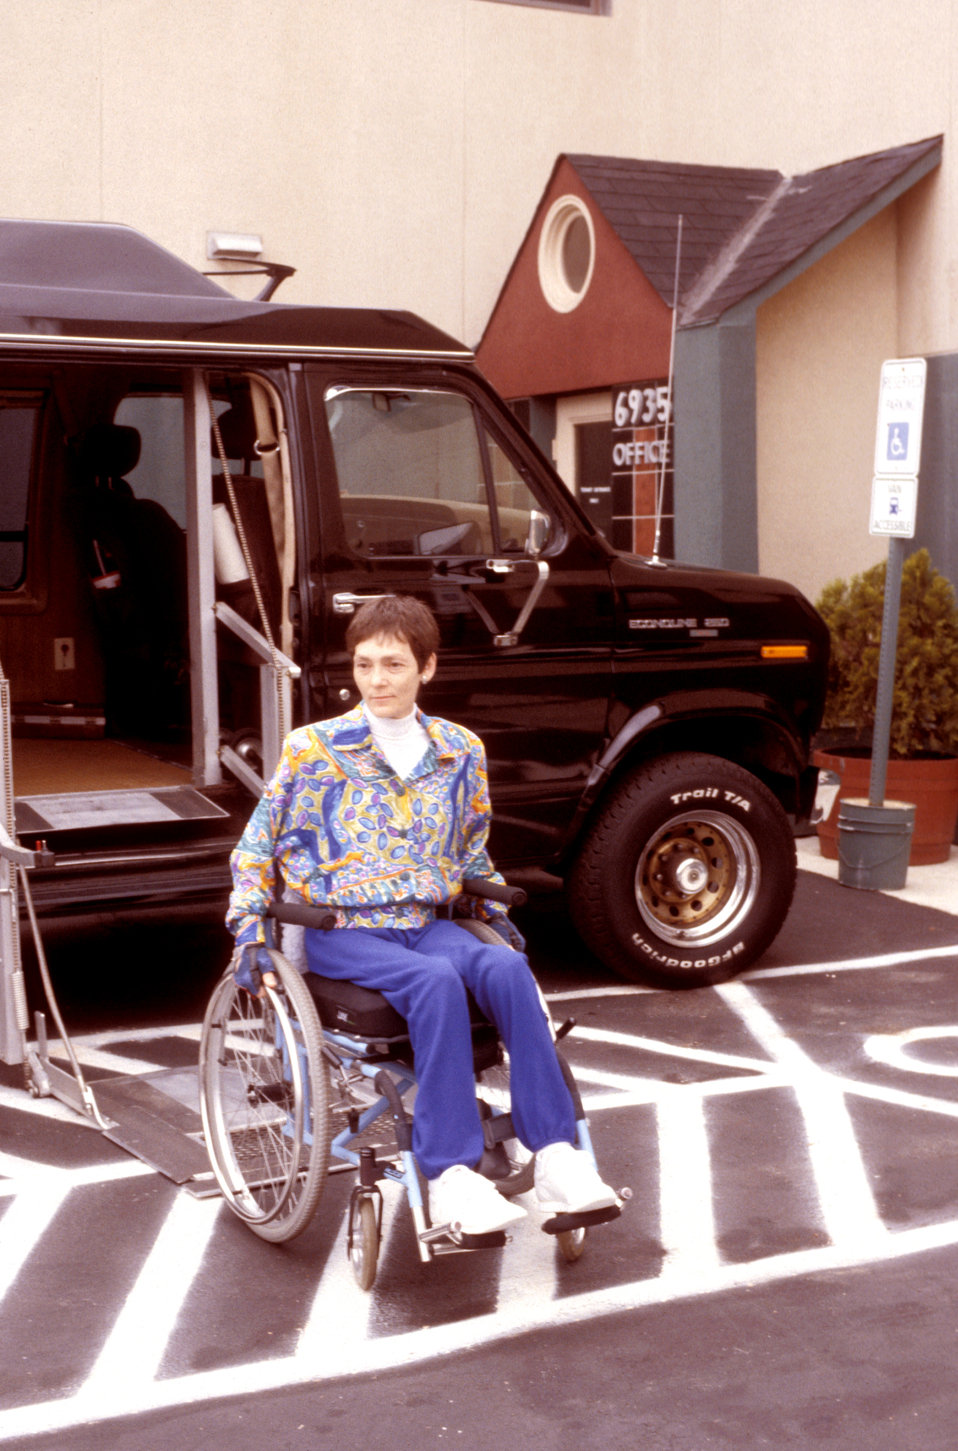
This was the sixth of six images (PHIL# 9068 - 9073) depicting a wheelchair-seated woman was shown in the process of exiting a wheelchair lift-equipped van parked in a van-accessible parking space. The space displayed both a pole-mounted sign, as well as a designated ground symbol, each adorned with the international symbol of accessibility. In addition, a wide aisle next to the van's parking space had been defined by striping on the ground, allowing ample space for the person using the side-mounted lift to exit safely and efficiently. The images showed the individual having first backed onto the lift, then descending to the ground. The woman then exited onto the striped space next to the van.